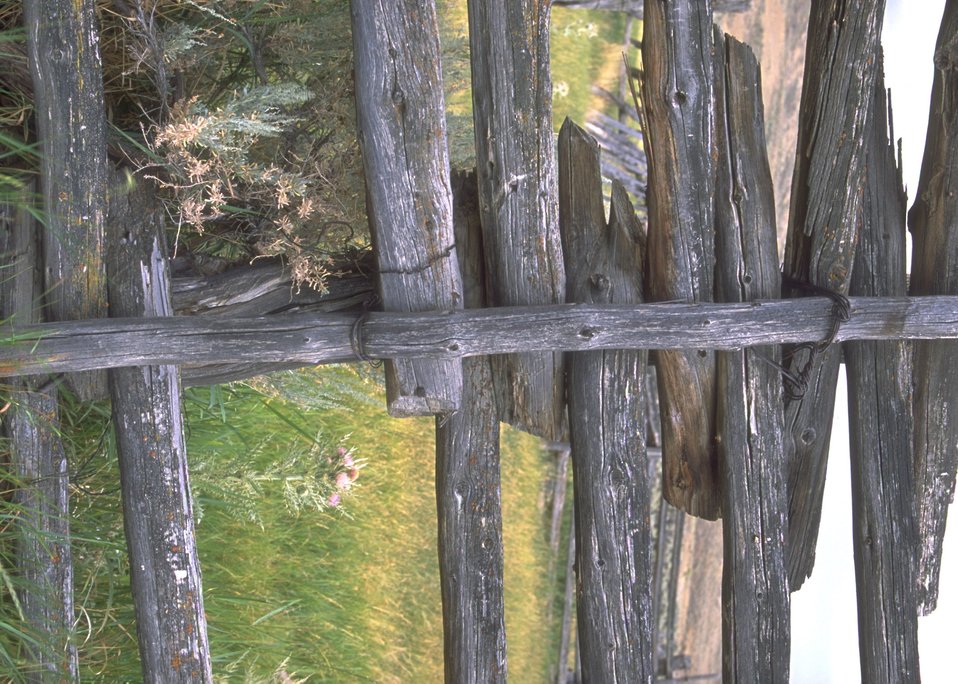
Historic Crookston Ranch near OHV Sand Dunes Area, Rock Springs Field Office